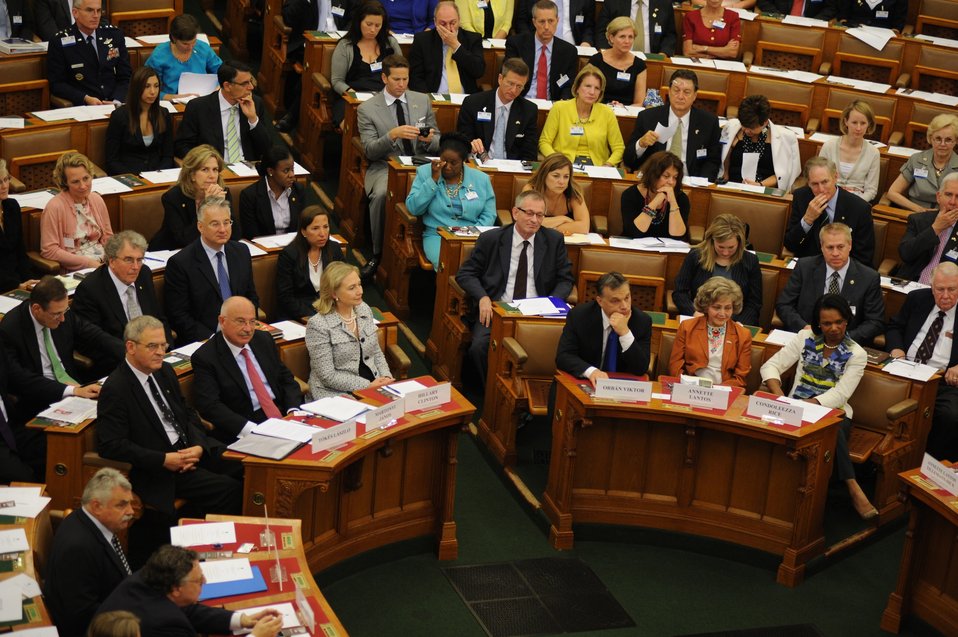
Secretary Clinton Listens During the Inauguration of the Tom Lantos Institute

U.S. Secretary of State Hillary Rodham Clinton sits back and listens during the inauguration of the Tom Lantos Institute in Budapest, Hungary, June 30, 2011.